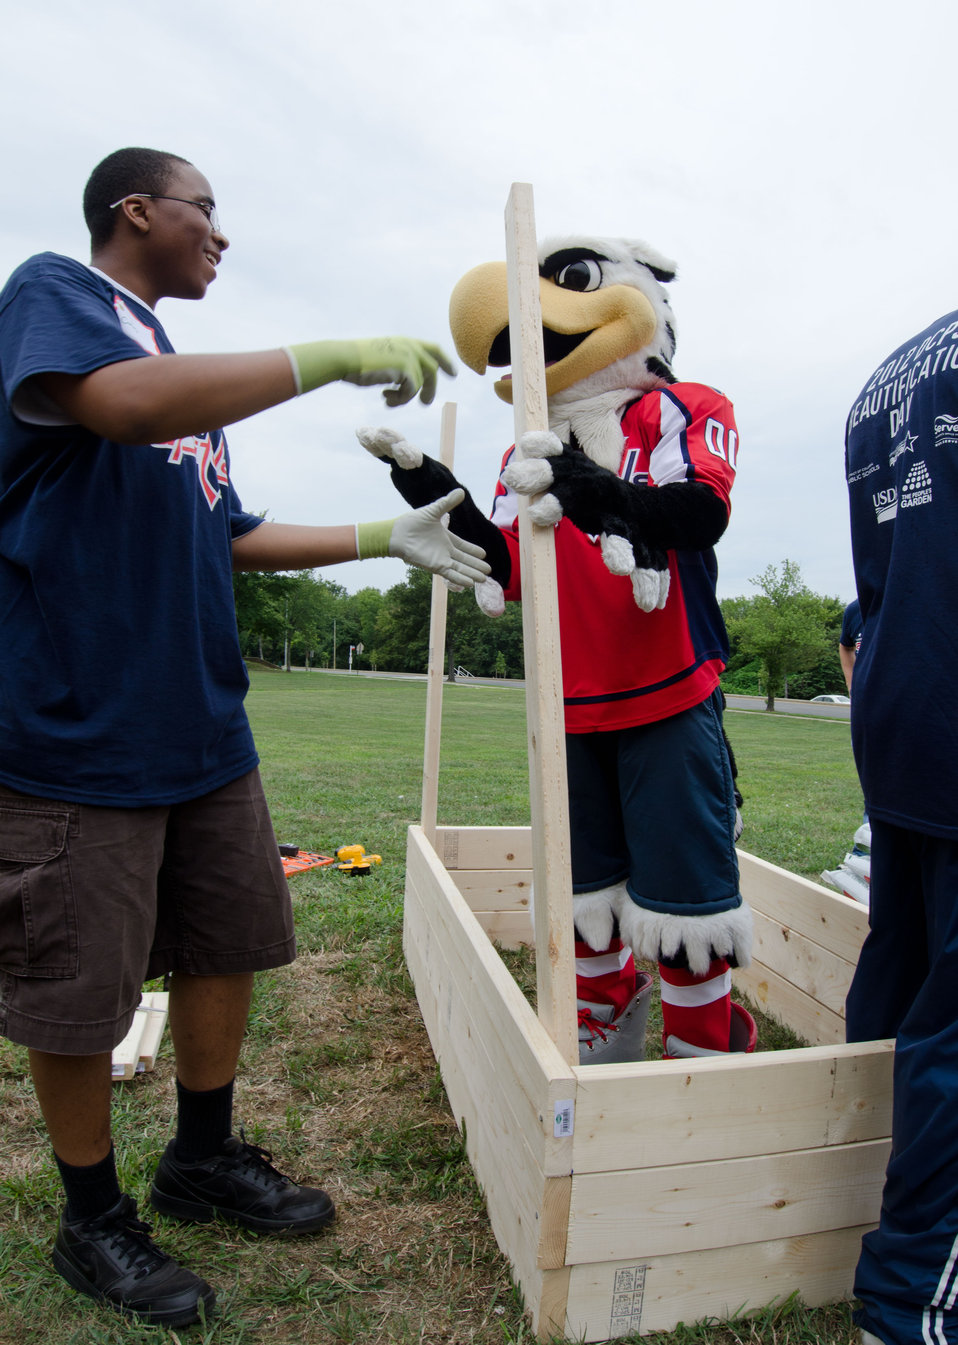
Washington Capitals' hockey mascot Slapshot tries to reposition the planter box uprights, as volunteer Carlos happily try to explain that uprights need to be up, and at a right-angle to the base, when U.S. Department of Agriculture (USDA) People’s Garden Executive Master Gardeners, friends, and family, along with Washington Capitals fans volunteer in District of Columbia Public Schools’ (DCPS) Beautification Day, on Saturday, August 25, 2012, at Thurgood Marshall Elementary School, in Washington, D.C. Each year people are invited to help “spruce up” public school facilities in preparation for the first day of school. More the 70 volunteers pitched in at this large school facility. The People’s Garden effort involves building and painting raised planter boxes, then preparing the soil mixture so they are “ready to grow.” Additionally, a team that includes descendants of U.S. Supreme Court Justice Thurgood Marshall assembles a prefabricated garden toolshed. The Justice’s son, John Marshall leads the team, which includes Brianna the Justice’s great-grand daughter in one of many multi-generational efforts at this school today. Washington Capitals Forward Mike Riberio, his family and mascot Slapshot participated in every project underway at Marshall School. From the outside gardens, to inside murals, and robotics worktable construction, the teams made their goals.